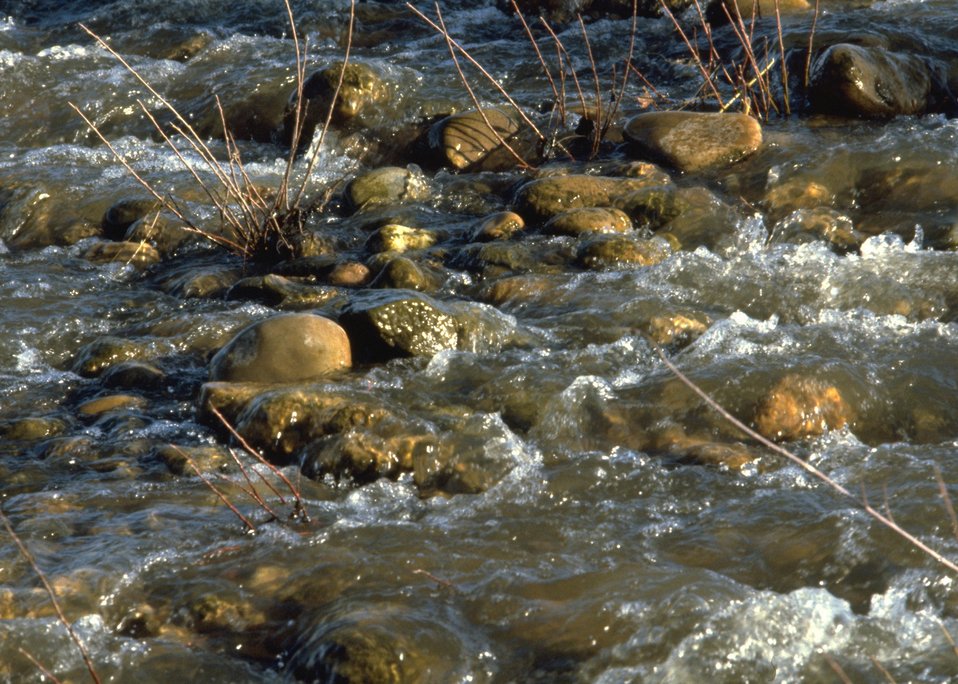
Gushing stream water.